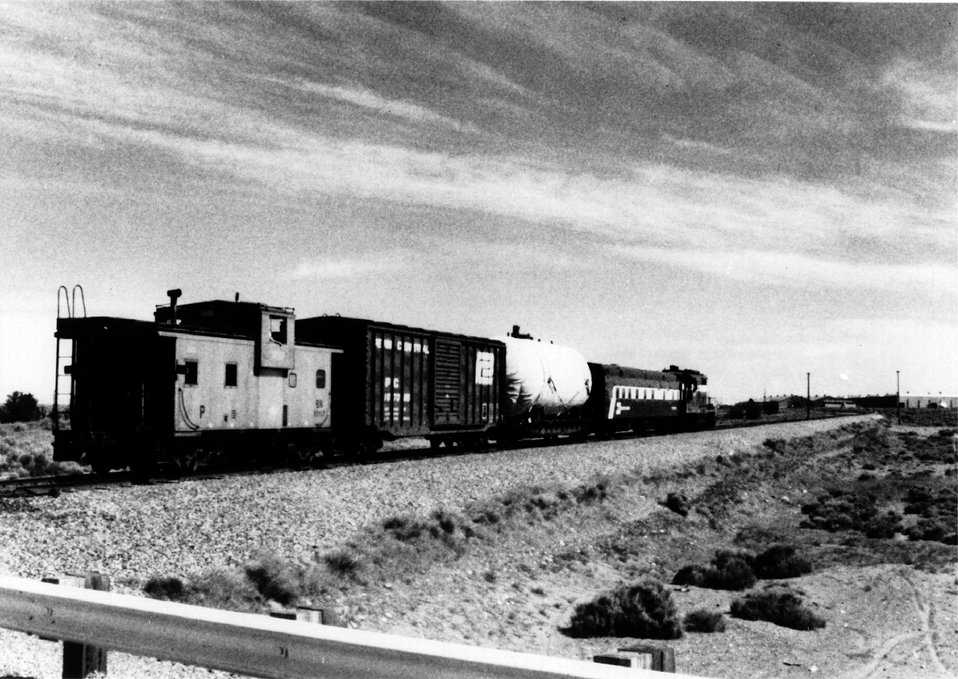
A special four-car train was used to transport the sodium secondary storage tank from Wilmington, Del., to the Fast Flux Test Facility (FFTF). c. 1974.